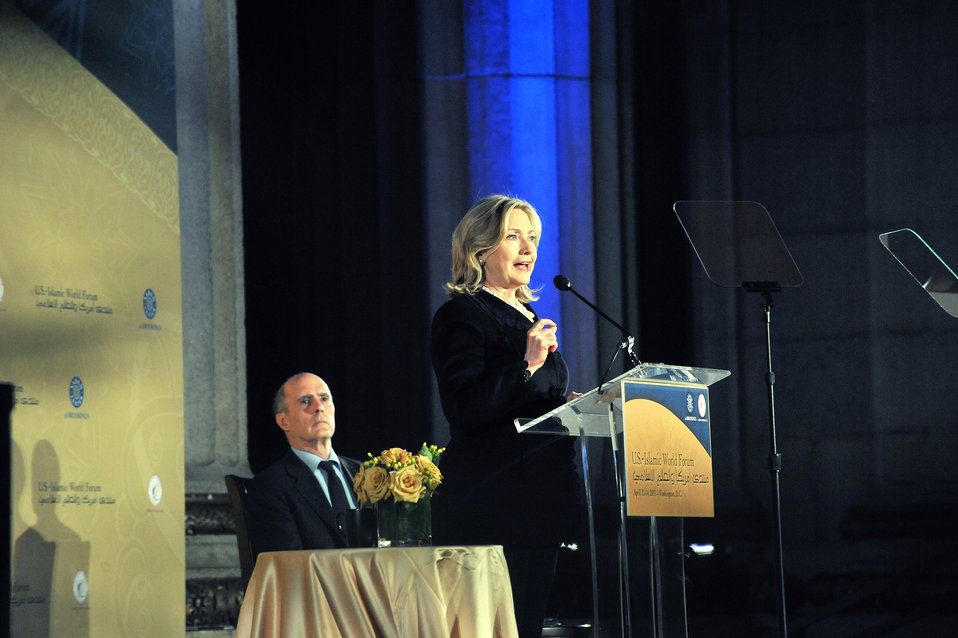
Secretary Clinton Delivers Remarks at U.S.-Islamic World Forum

U.S. Secretary of State Hillary Rodham Clinton delivers remarks at the U.S.-Islamic World Forum in Washington, D.C., on April 12, 2011.